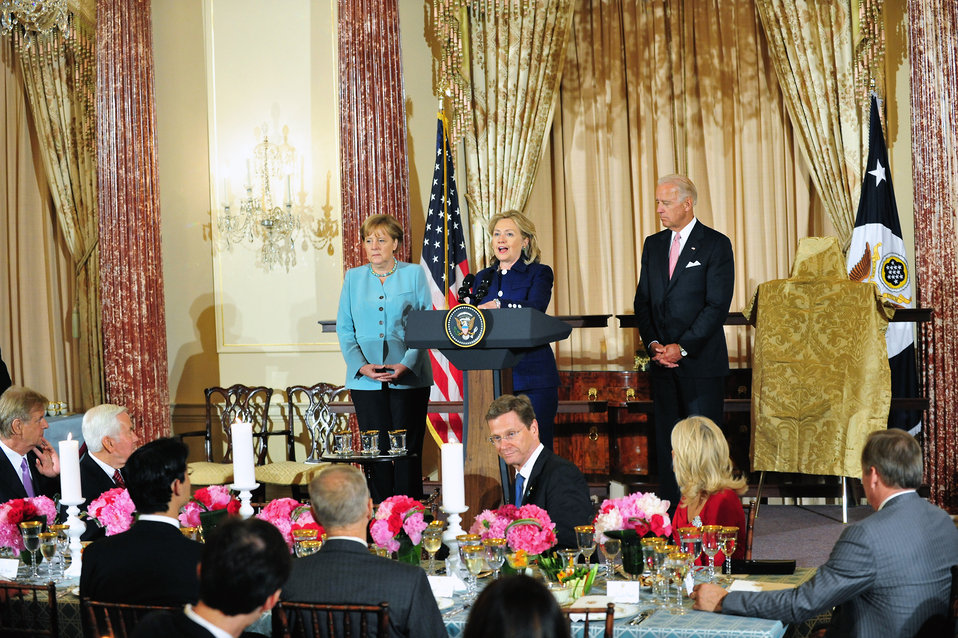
Secretary Clinton Delivers Remarks

U.S. Secretary of State Hillary Rodham Clinton delivers remarks at a State Luncheon hosted in honor of German Chancellor Angela Merkel, at the U.S. Department of State in Washington, D.C., on June 7, 2011. The luncheon was co-hosted by U.S. Vice President Joseph Biden and Dr. Jill Biden, and Secretary Clinton.